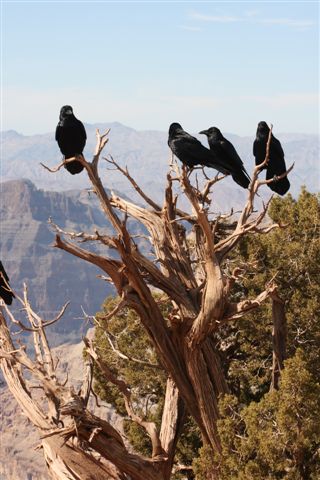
Uploaded by request of Linda Grantham

Taken at the Grand Canyon

While visiting the Grand Canyon this year, we came upon these ravens who
were patiently waiting for a snack from the visitors.